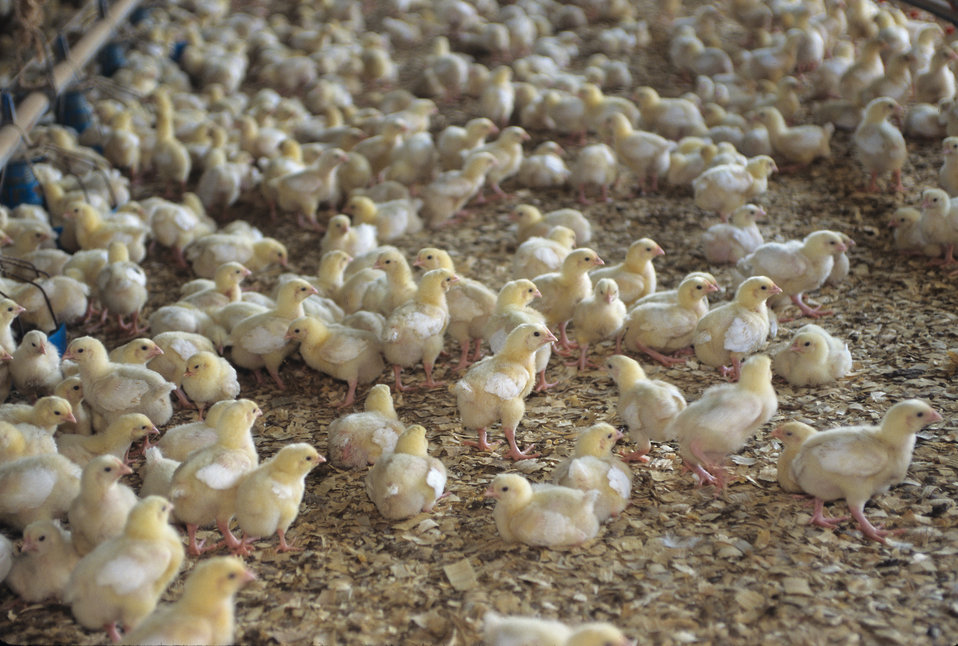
Newly hatched chickens roam about in a poultyr barn in TX on September 2, 1996.